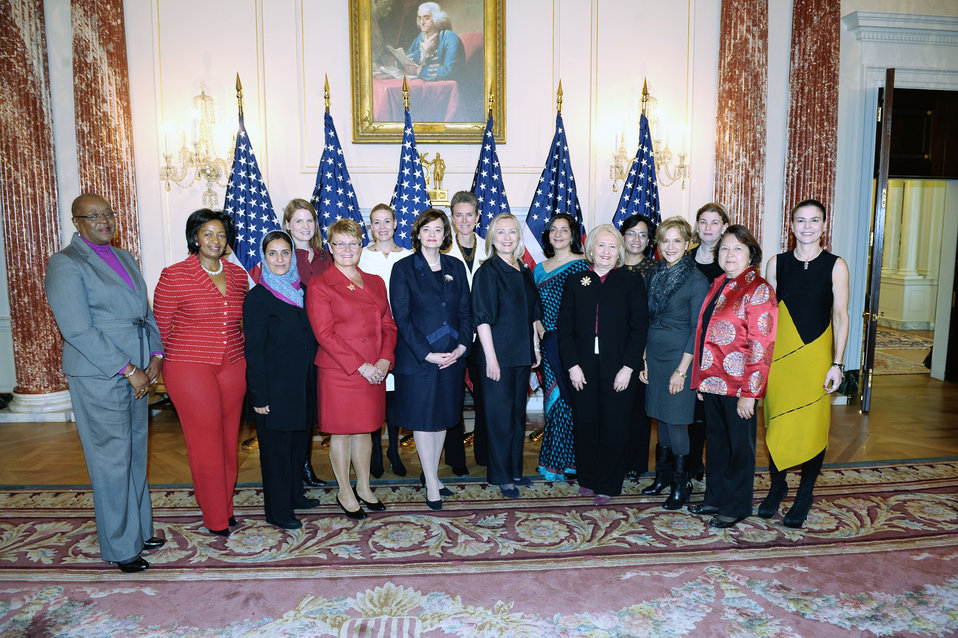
Secretary Clinton Hosts Inaugural Meeting of International Council on Women's Business Leadership

U.S. Secretary of State Hillary Rodham Clinton hosts the inaugural meeting of the International Council on Women's Business Leadership at the U.S. Department of State in Washington, D.C., on January 24, 2012.